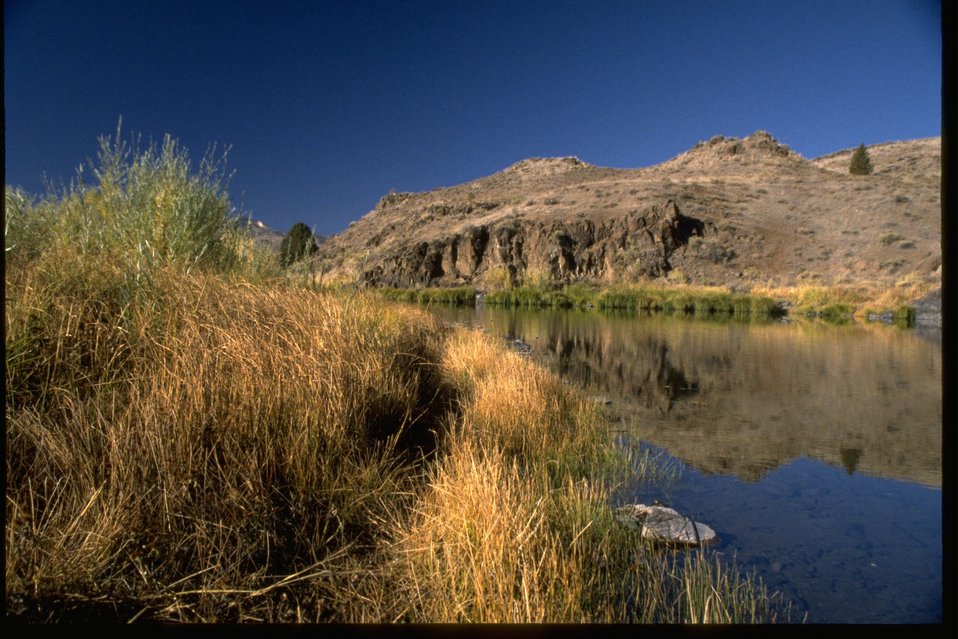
Riparian vegetation along the bank of the John Day River, near Bridge Creek.